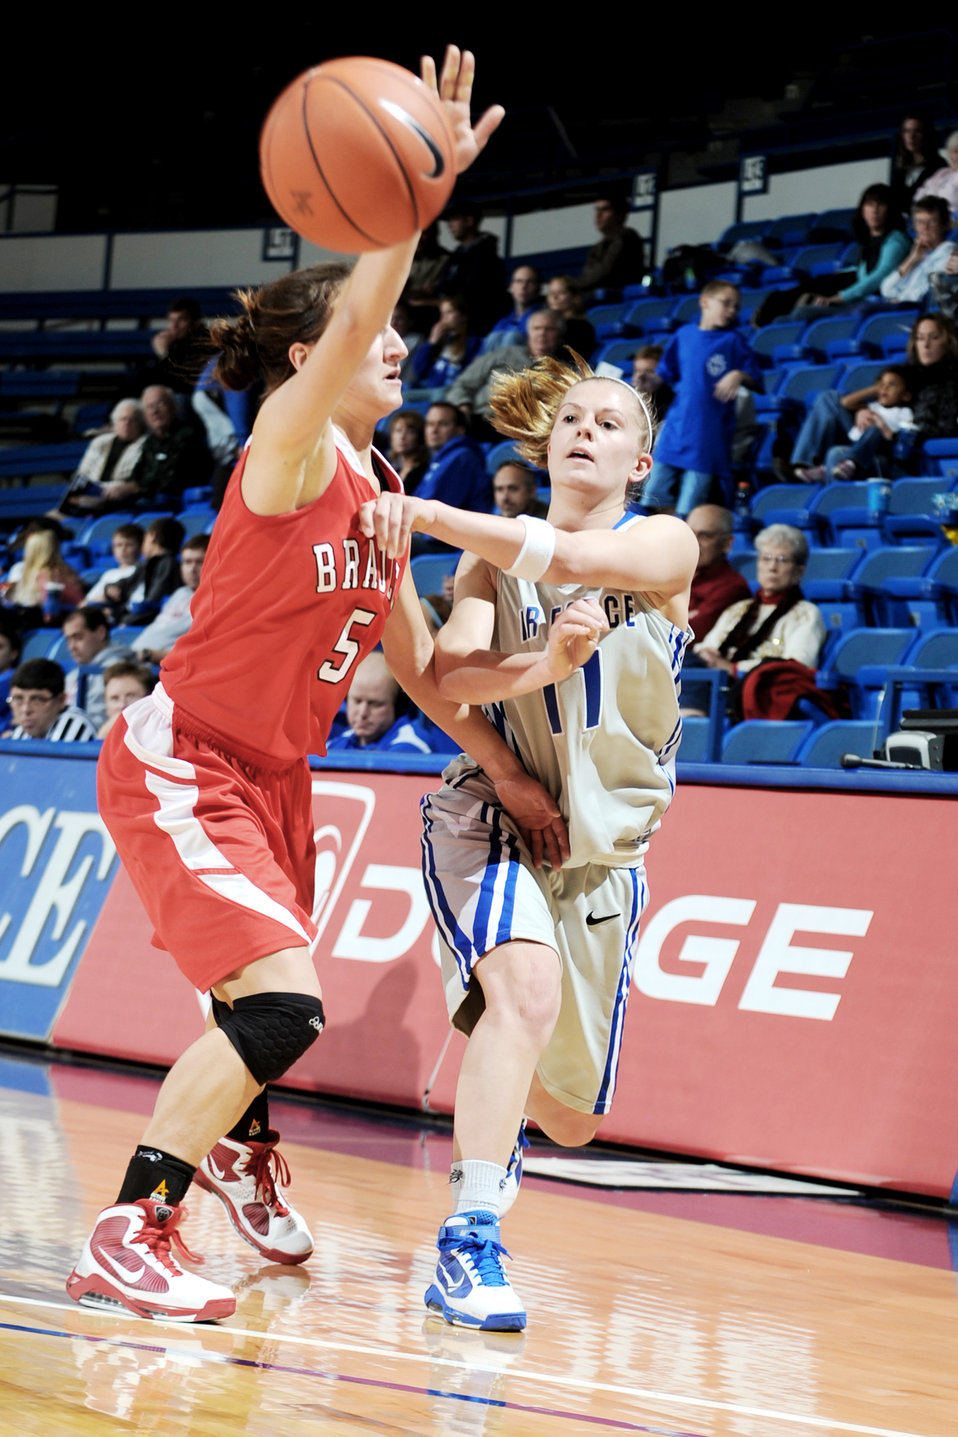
Women's basketball: Bradley University runs past Air Force

Falcon sophomore guard passes the ball toward the basket past Braves Hanna Muegge during the U.S. Air Force Academy game against Bradley University at the Academy's Clune Arena Dec. 19, 2009. Air Force lost the game 62-45.